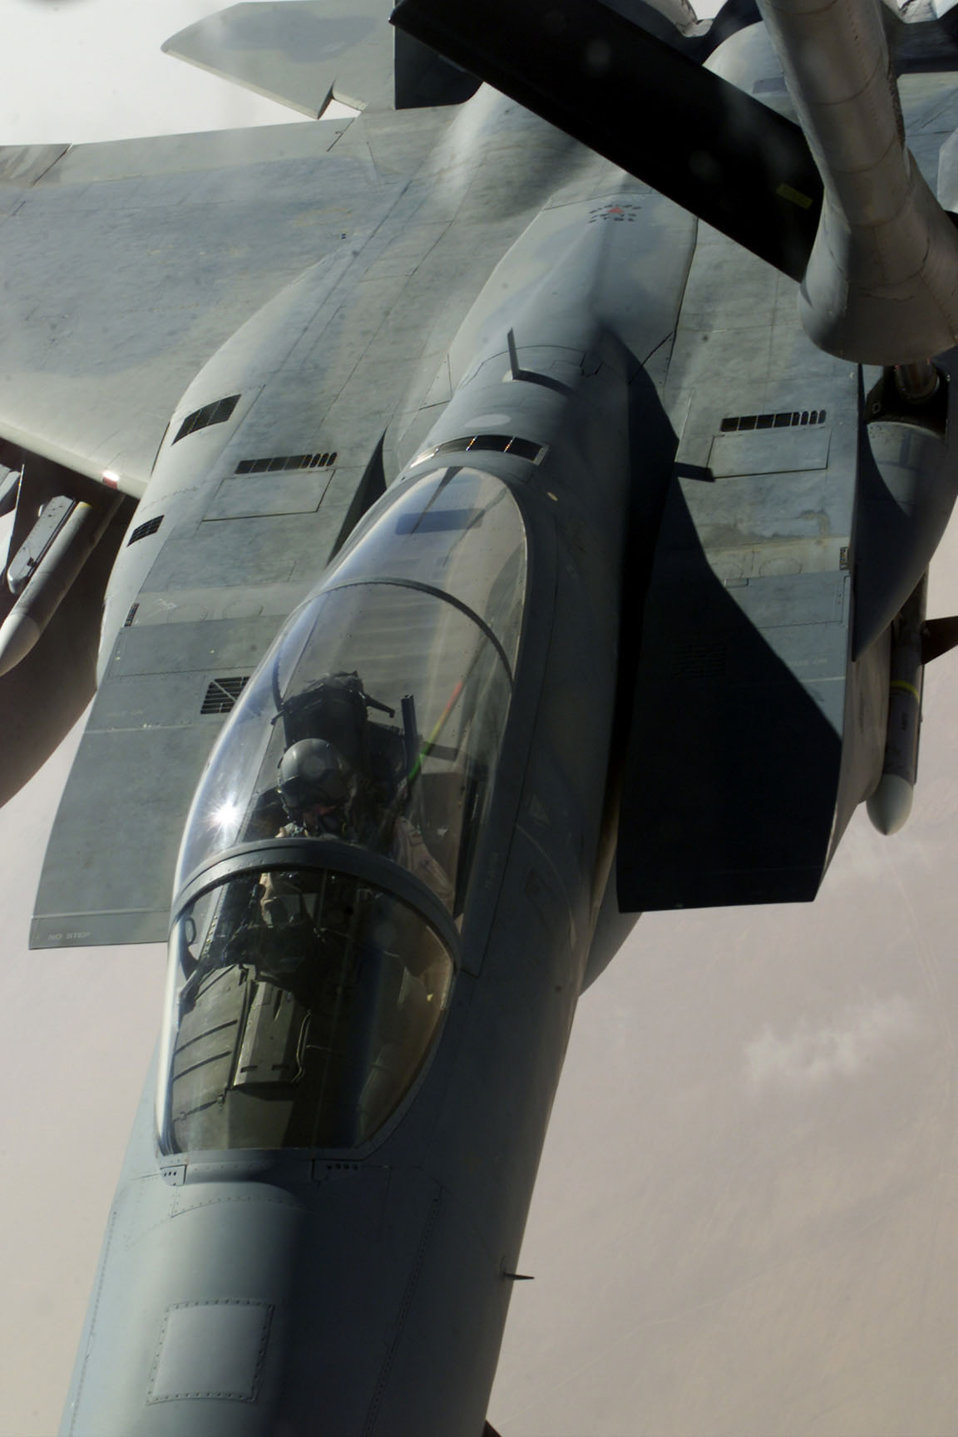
Eagle fuel

OPERATION SOUTHERN WATCH -- An F-15 Eagle waits on Oct. 27, 2000, for the boom of a KC-135 Stratotanker over Saudi Arabia. The F-15s are a part of the coalition forces of the 363d Air Expeditionary Wing who enforces the no-fly and no-drive zone in Southern Iraq to protect and defend against Iraqi aggression.